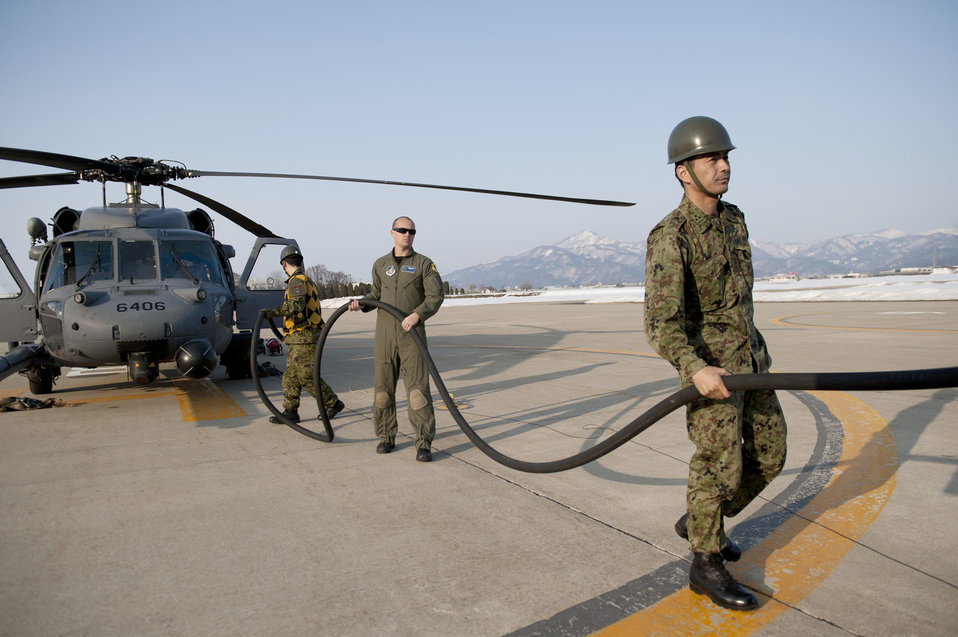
Japan's aftermath

Tech. Sgt. Michael Wells and members of the Japan Ground Self-Defense Force refuel an HH-60 Pave Hawk helicopter March 13, 2011, at Yamagata, Japan. Yamagata is a fuel staging area in support of Japan's earthquake and tsunami recovery efforts. Sergeant Wells is an aerial gunner assigned to the 33rd Rescue Squadron.